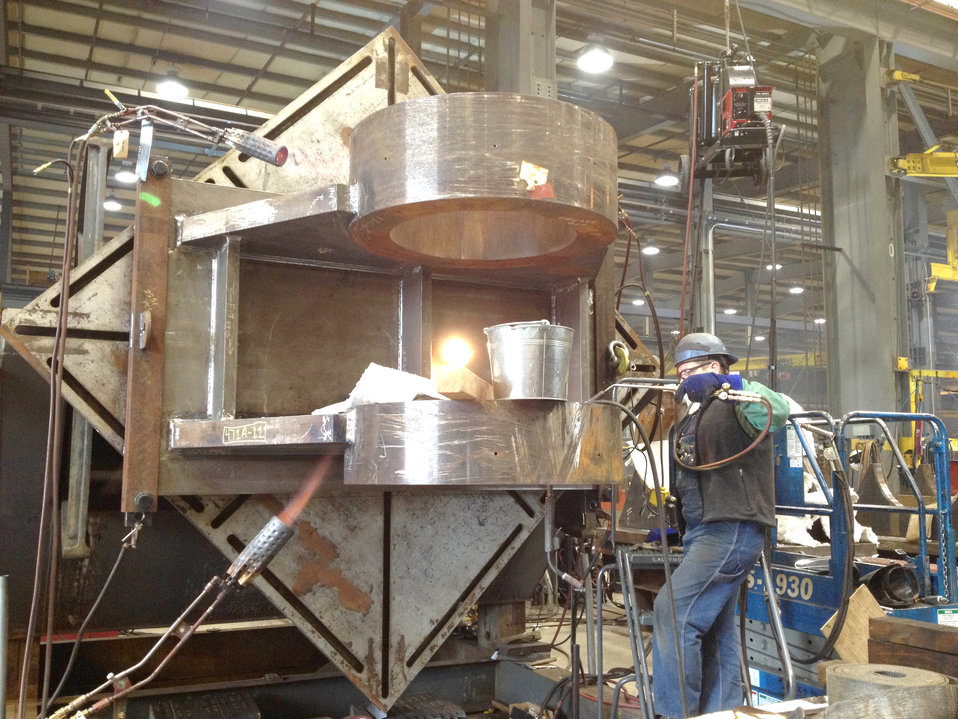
District staff checks progress on Folsom Dam auxiliary spillway gates

A crew member welds together metal on the pin pedestal for the new Folsom Dam auxiliary spillway Nov. 28, 2012, at the Oregon Iron Works’ Clackamas, Ore., facility. The pin pedestal is part of the trunnion assembly for the tainter gates on the control structure. A trunnion is a cylindrical protrusion used as a mounting and/or pivoting point, and will help the gates to open and close during operation. Personnel from the U.S. Army Corps of Engineers Sacramento District, including Commander Col. Bill Leady, took a tour of the site to gauge the progress on 12 massive bulkhead and tainter gates, which will control the flow of water from Folsom Lake through the spillway’s control structure. The spillway project is a joint effort of the U.S. Army Corps of Engineers, the U.S. Bureau of Reclamation, and state and local partners to reduce flood risk throughout the Sacramento region. The project is scheduled to be completed in 2017.